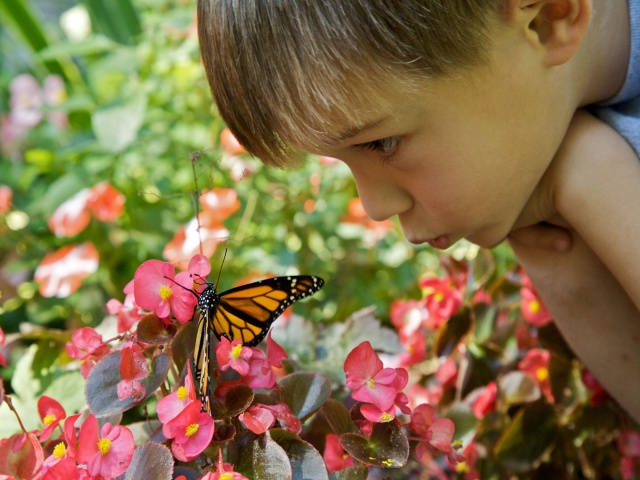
Boy with Monarch Butterfly